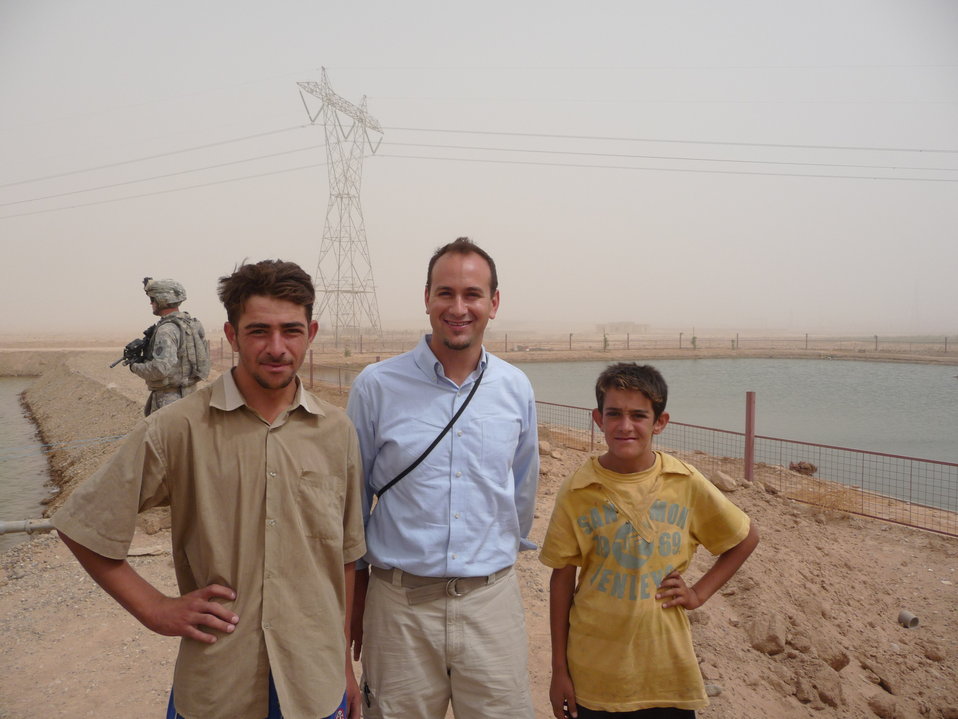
Dan Gedacht With Children in Iraq

Dan Gedacht of U.S. Embassy Baghdad meets with children of farmers at a fish farm outside Tikrit, Iraq, September 2009.